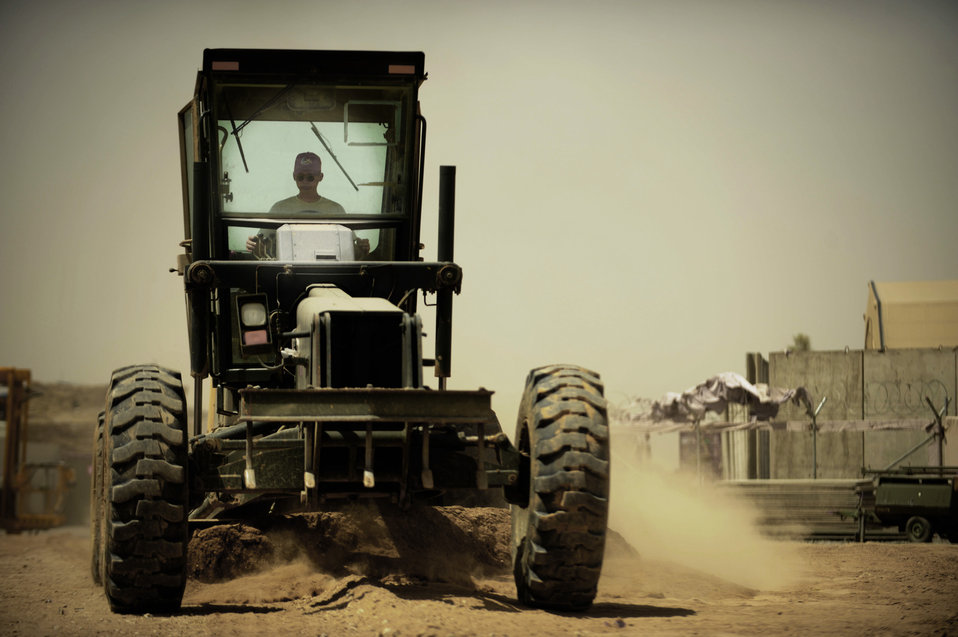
RED HORSE team serves as 'backbone' of Afghanistan construction

Staff Sgt. Derek Ross operates a grader May 7 at Kandahar Airfield, Afghanistan. RED HORSE members are assisting the 451st Air Expeditionary Group with airfield expansion to accommodate the influx of aircraft required to support the surge in Afghanistan. Sergeant Ross is an 819th Expeditionary Red Horse Squadron engineer.